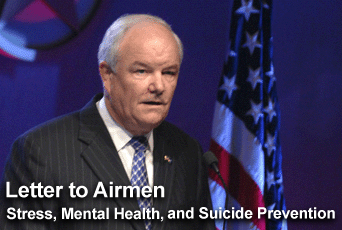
Letter to Airmen

In the latest Letter to Airmen, Secretary of the Air Force Michael W. Wynne discusses stress and suicide prevention.